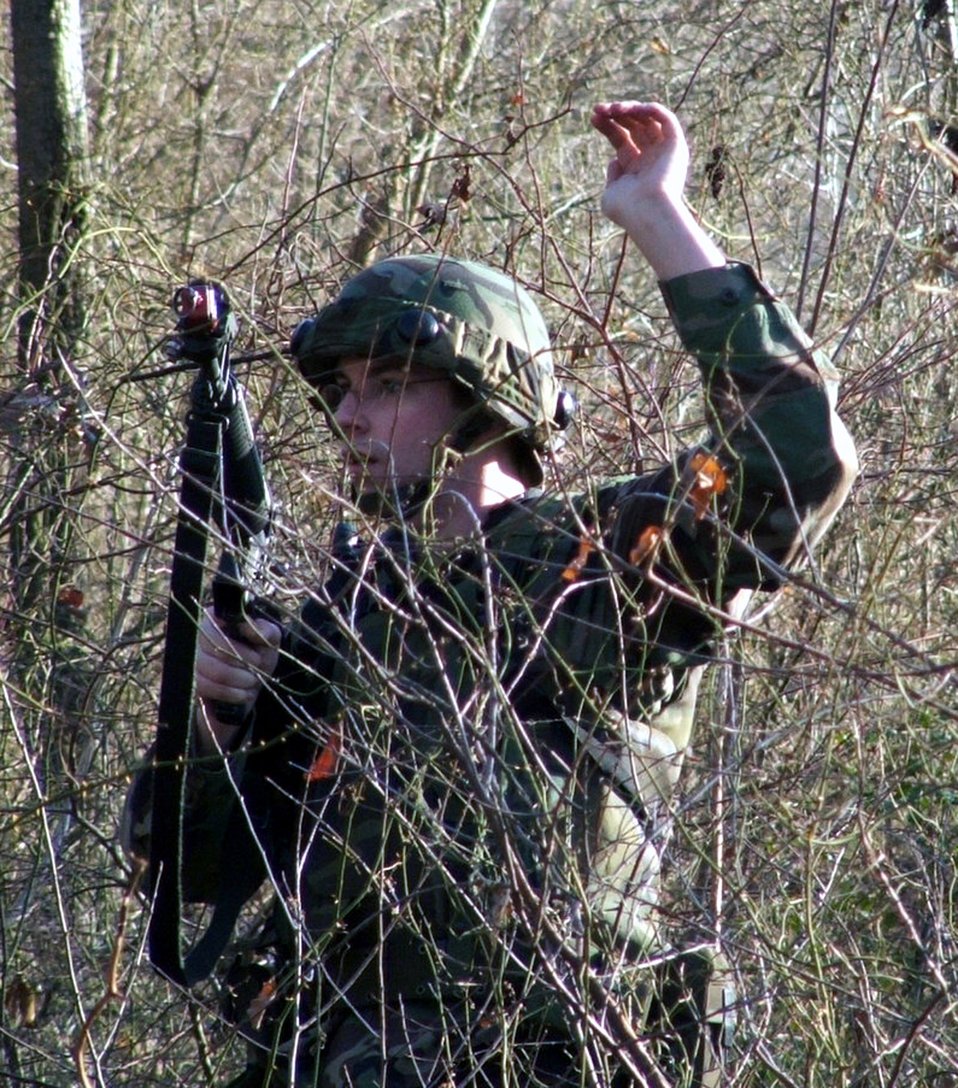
AIR FORCE INTEGRATED CONTINGENCY SKILLS TRAINING COURSE 06-1

FORT DIX, N.J. (AFPN) -- An Airman signals to his squad during a combat patrol and tactics training session Jan. 12. More than 100 students from multiple career fields participate in the Air Force Integrated Contingency Skills Training Course. In the course, Airmen learn everything from combat tactics and patrolling to convoy operations and combat first aid. The course is directed and taught by the Air Mobility Warfare Center's 421st Combat Training Squadron.